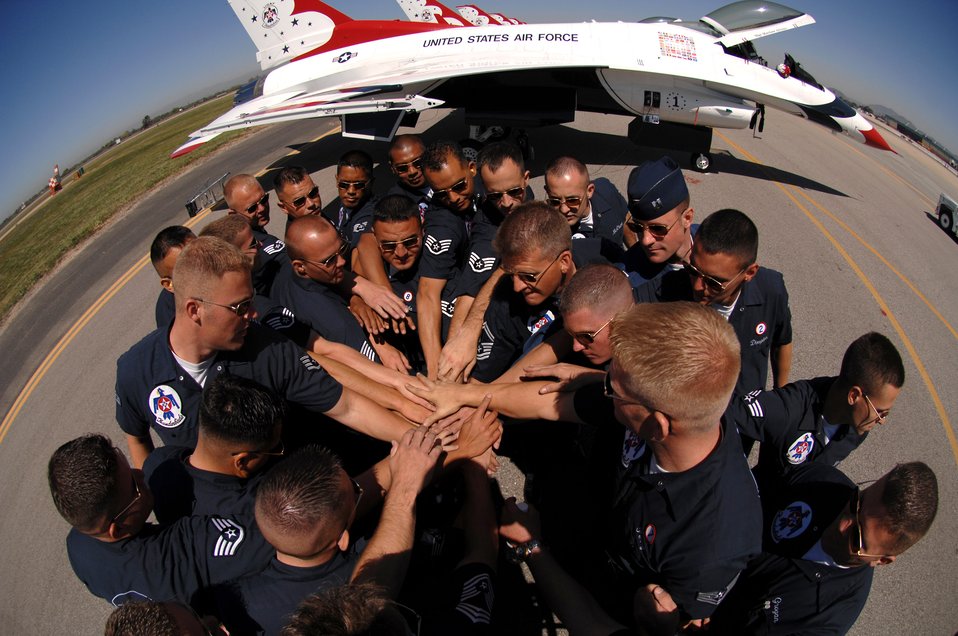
T-Birds getting ready for the airshow

Air Force Thunderbird maintainers bring it in for a cheer after completing pre-flight checks March 30 prior to a Thunderbird practice show at Naval Base Ventura County, Point Mugu, Calif.